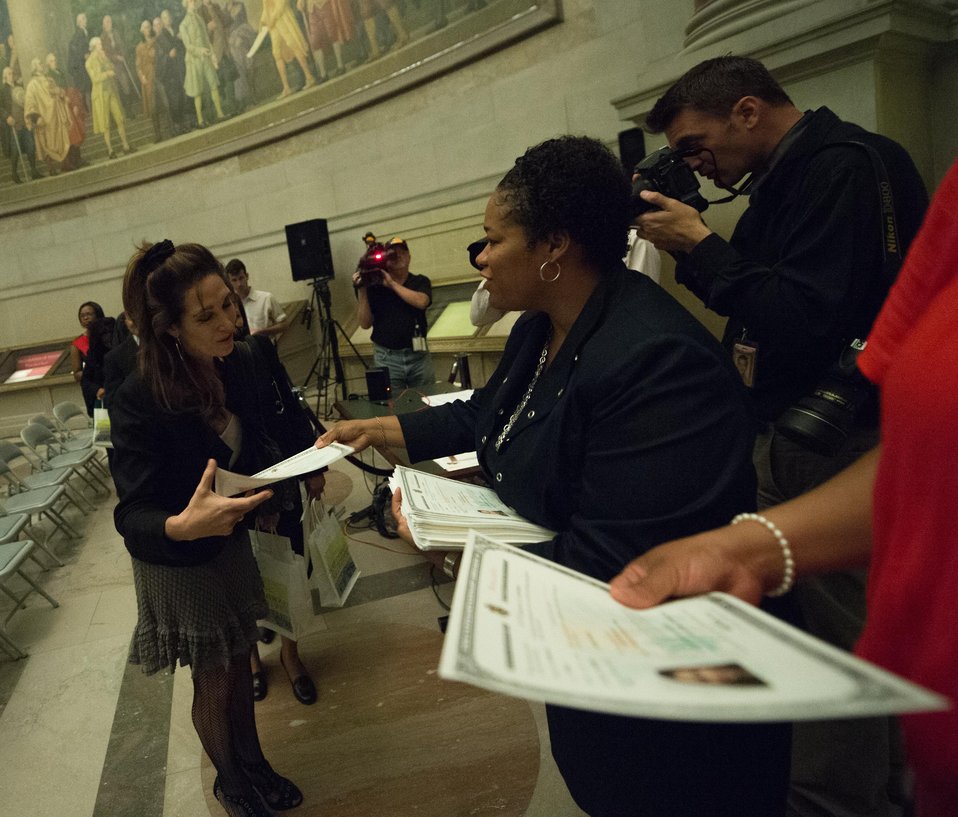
Constitution Day Naturalization Ceremony

New citizens collect their certificates after the ceremony. Congratulations!